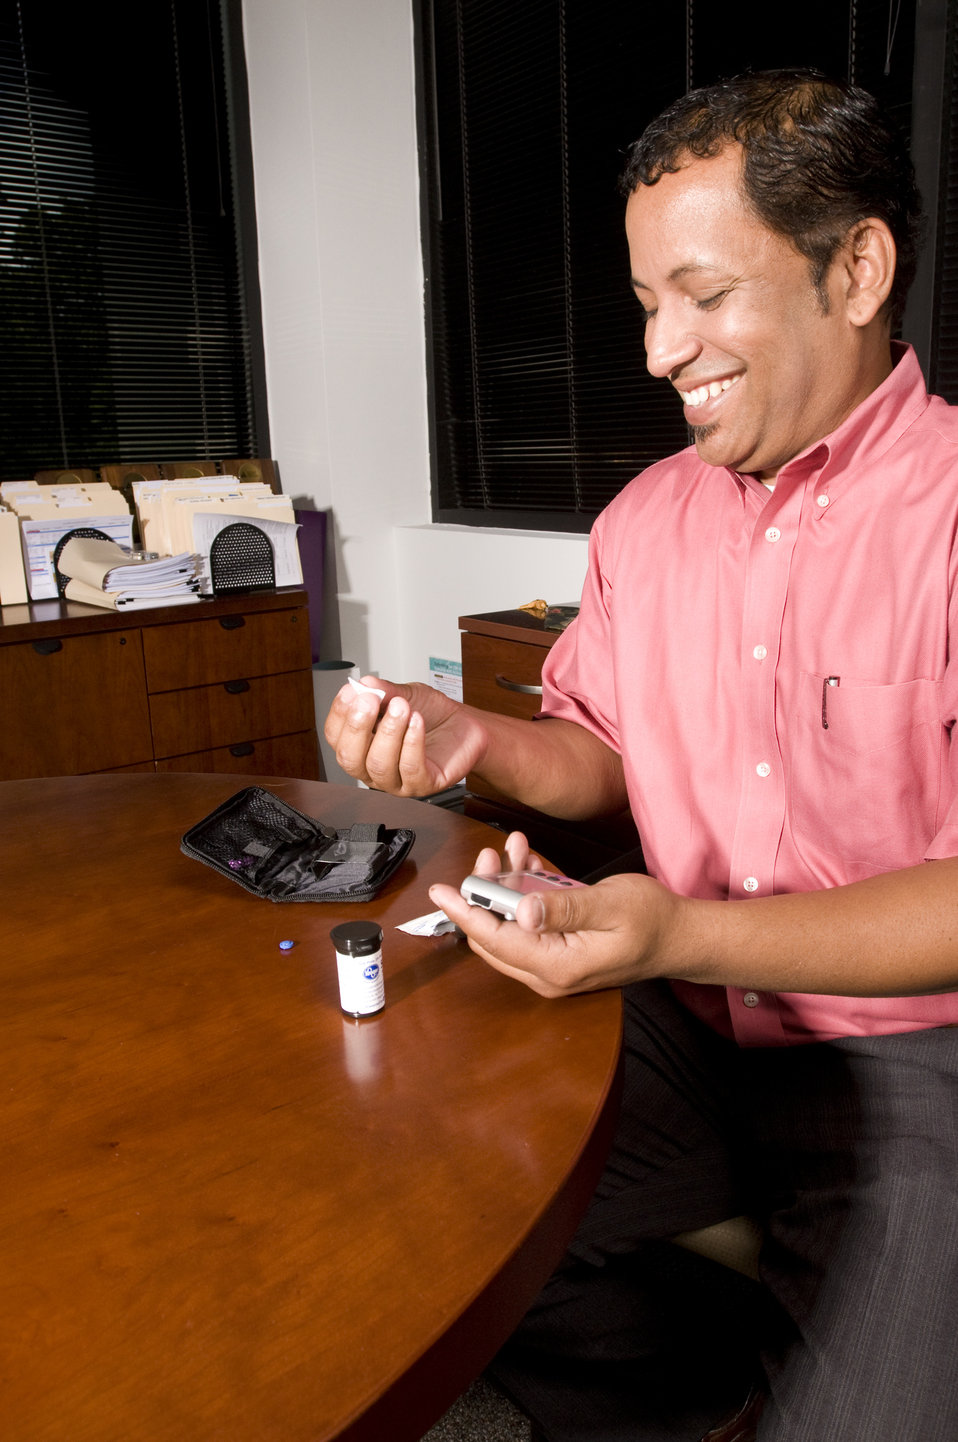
The man pictured here was checking his blood glucose level. This process is known as self-monitoring blood glucose, and it's a way for people with diabetes to find out how much glucose is in their blood. A drop of blood from the fingertip is placed on a special coated strip of paper that 'reads' the amount of glucose in the blood. Many people use an electronic meter to get this reading. This patient looked happy at the test result he read on the electronic glucose meter. His reading would be considered normal if before a meal, it read 70-130 mg/dl (5.0-7.2 mmol/l), and after eating, it read